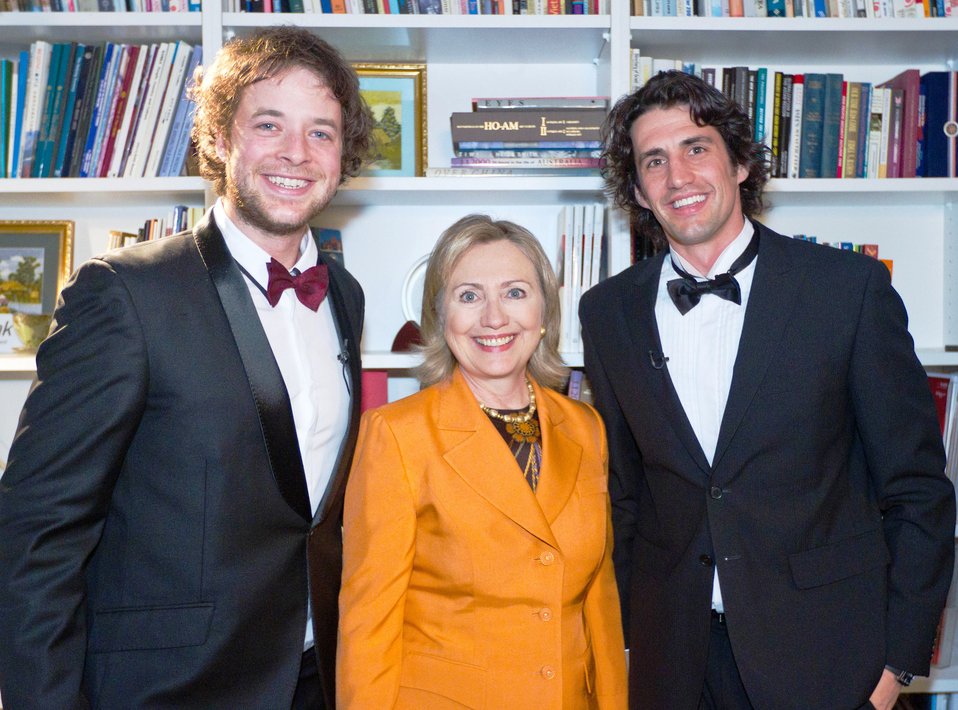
Secretary Clinton Poses for a Photo With Hamish Blake and Andy Lee

U.S. Secretary of State Hillary Rodham poses for a photo with Hamish Blake, left, and Andy Lee, right, in Melbourne, Australia, on November 7, 2010.